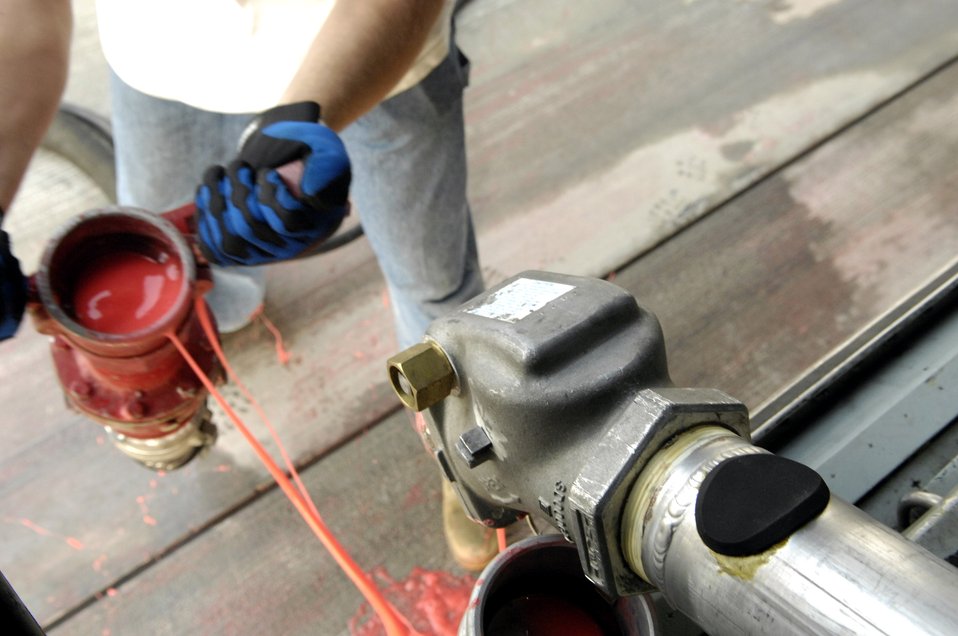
Guard, Reserve aid in California firefighting efforts

A ground crew member services a C-130 Hercules with fire retardant in support of the California firefighting efforts Oct. 25 at Channel Islands Air National Guard Base, Calif. Air Force Reserve Command and Air National Guard Airmen are participating in the Southern California firefighting effort.